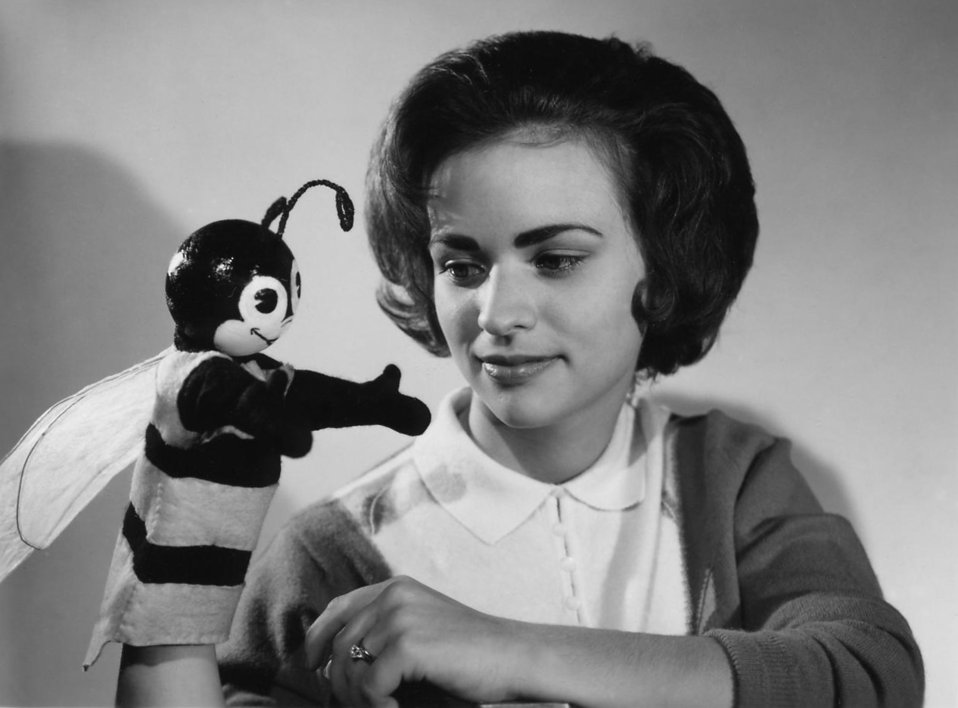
This early 1960s photograph pictured a public health employee while she was displaying what was once the Centers for Disease Control's national symbol of public health, the 'Wellbee.'